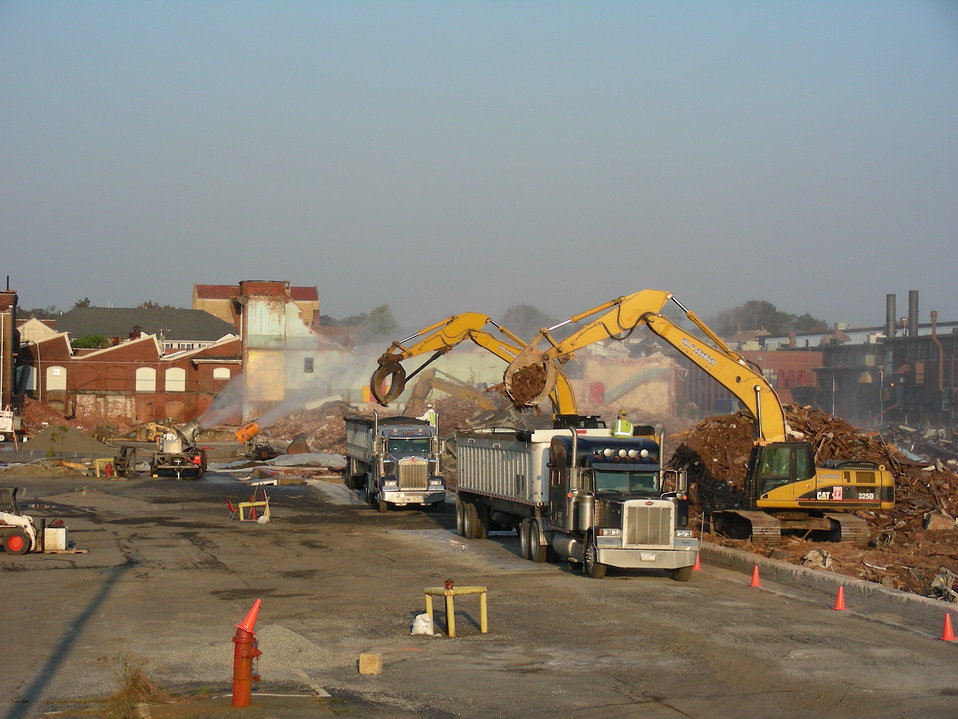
September 14, 2011 Trucks are loaded with debris at the Aerovox demolition site

The Aerovox Mill (formerly) located on Belleville Avenue in New Bedford, Massachusetts was one of the two primary sources that contributed to the high levels of PCB pollution in New Bedford Harbor. EPA has been working to address the PCB contamination in the harbor since 1983.

In 2010, a settlement was finally reached with the responsible party, EPA, the Massachusetts Department of Environmental Protection, and the City of New Bedford that made funding available to safely demolish the building.